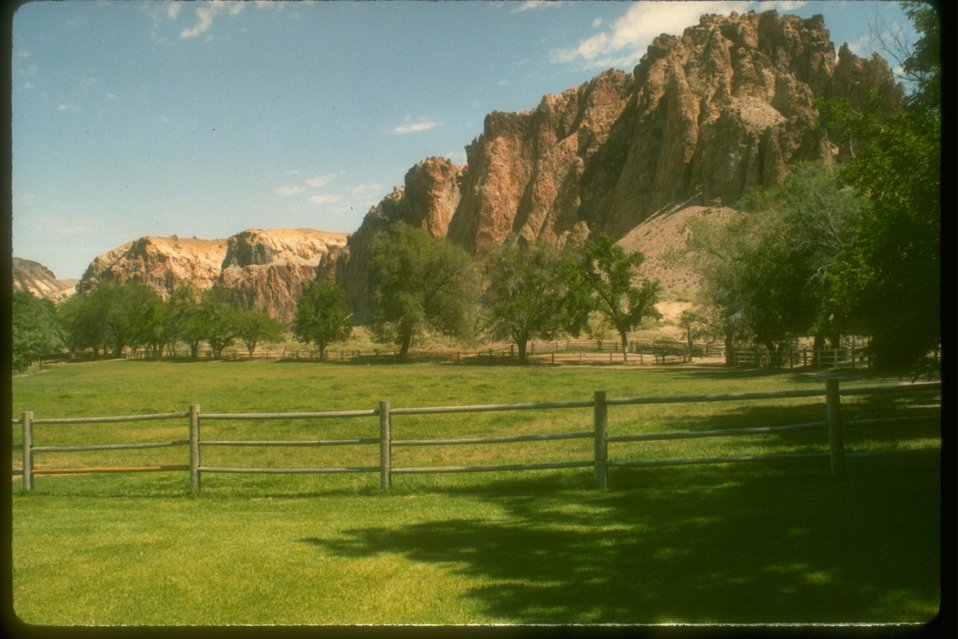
The Birch Creek Historical Ranch pasture.